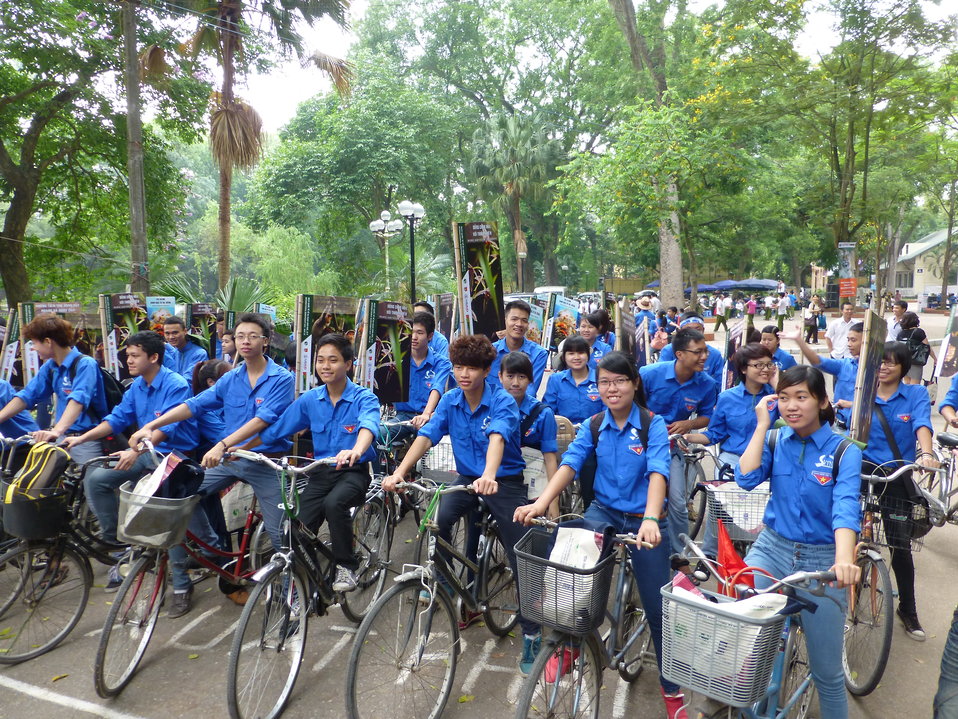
USAID Supports International Day for Biological Diversity in Hanoi